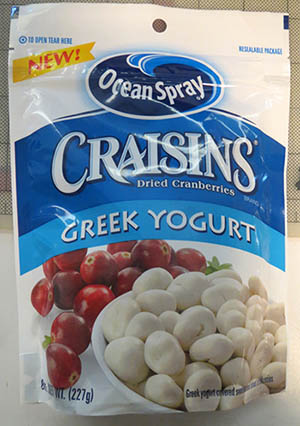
RECALLED – Yogurt covered dried cranberries

June 4, 2014 – Product Recall – Ocean Spray Voluntarily Recalls Limited Quantity of 8-ounce Greek Yogurt Covered Craisins® Dried Cranberries Which May Contain Undeclared Peanuts.